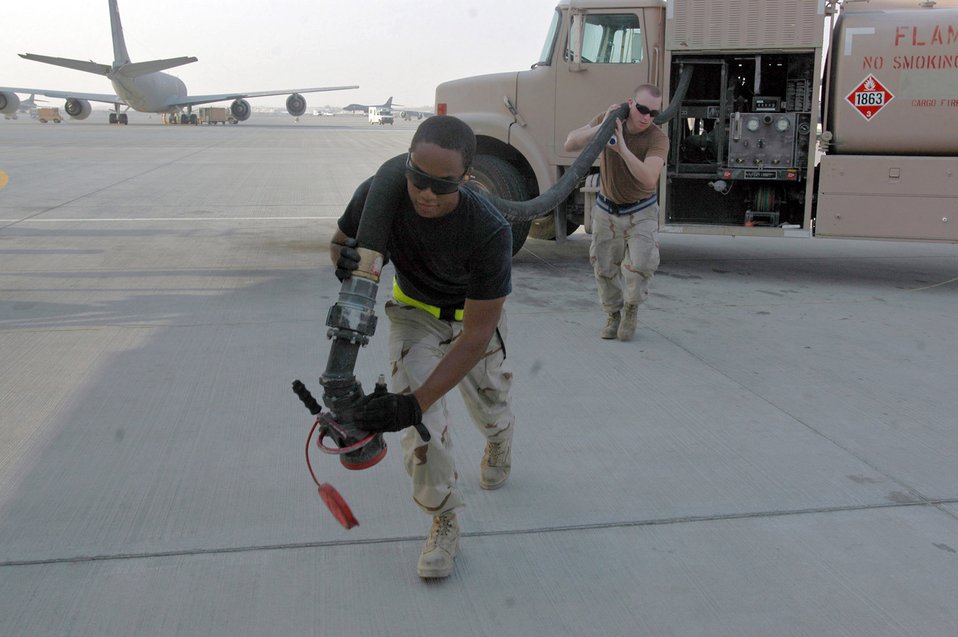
Life of the line

Senior Airman Dustin Dodson, 379th Logistics Readiness Squadron (left) and Senior Airman Ryan McPartland, 340th Aircraft Maintenance Unit heft a fuel line out to a waiting KC-135 Stratotanker in Southwest Asia. The tanker can take between three and four truck loads of fuel before it reaches capacity. The Airmen's units are part of the 379th Expeditionary Aircraft Maintenance Squadron.